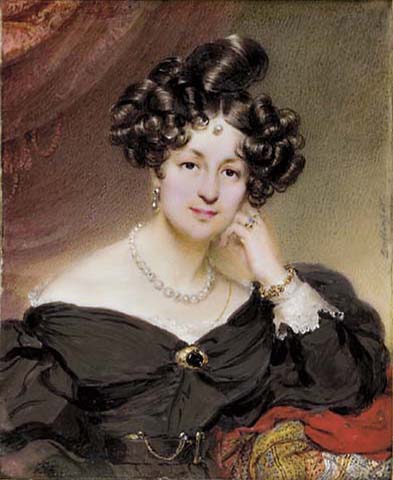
Elisabeth Vorontsova 1